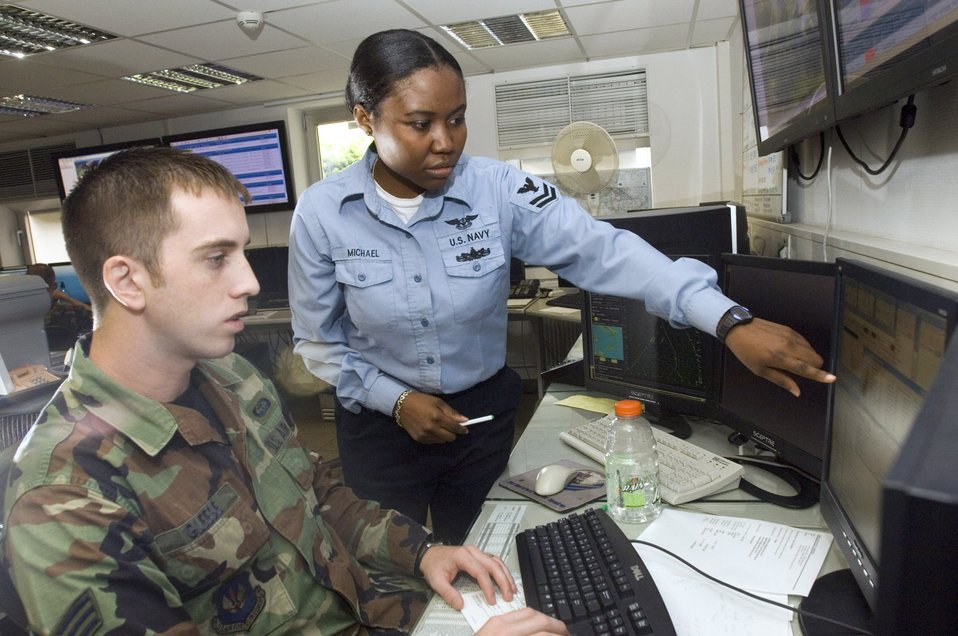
Air Force, Navy weather forecasters form one front

Senior Airman John Gleese and Aerographers Mate 2nd Class Evelyn Michael review weather updates at Sembach Air Base, Germany, Aug. 30. The two are weather forecasters with Sembach's 20th Operational Weather Squadron.